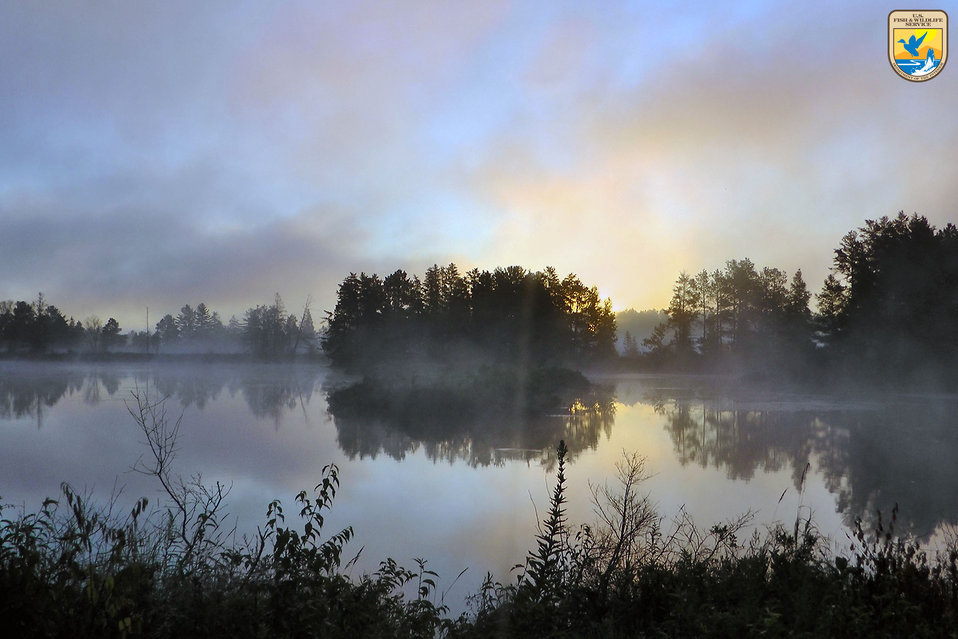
Sunrise - Region 3

Sunrise at Seney National Wildlife Refuge in Michigan